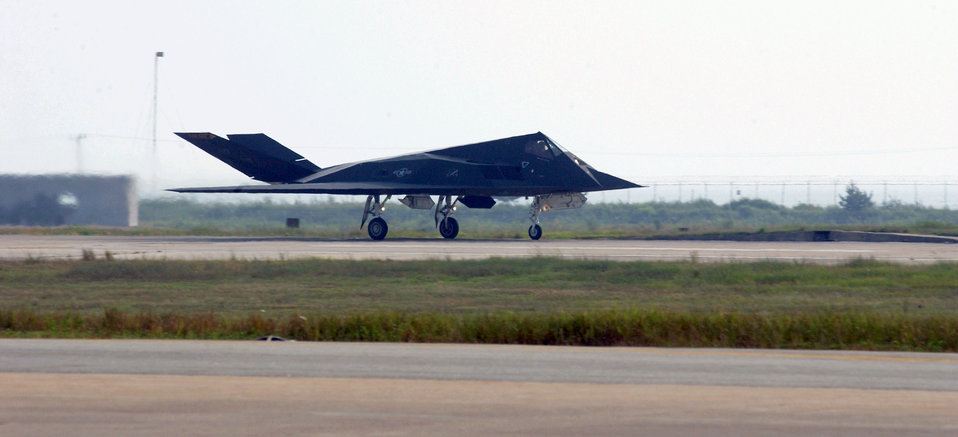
Time for take off

KUNSAN AIR BASE, South Korea -- An F-117 Stealth Fighter takes off for a mission from the flightline here Aug. 3.